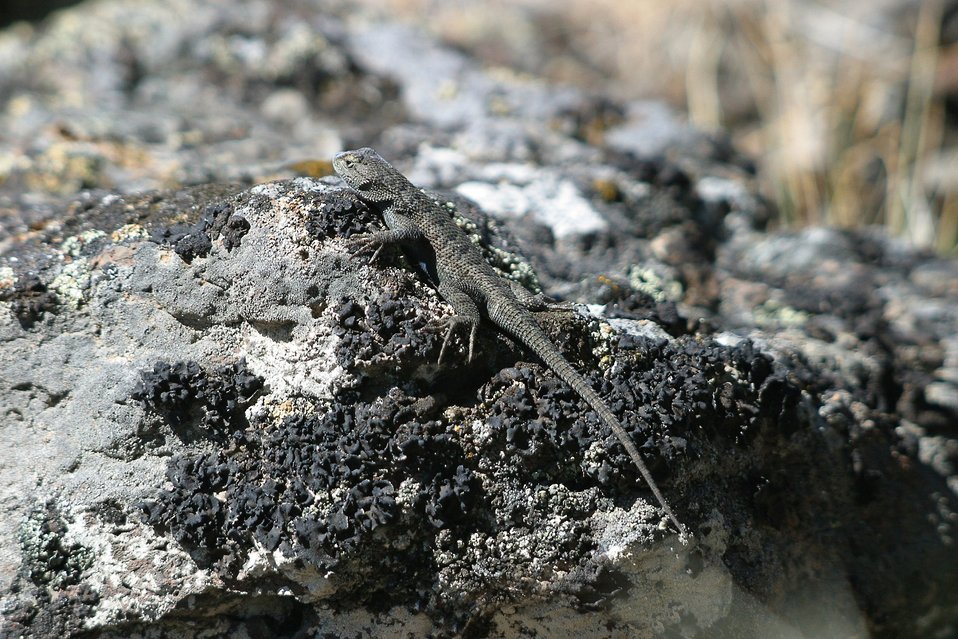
A Western Fence Lizard in the Kiger Wild Horse Viewing Area. The Western Fence Lizard is distributed throughout eastern Oregon, southwest Idaho, all of Nevada, western Utah, Southern California, and northwestern Baja California.